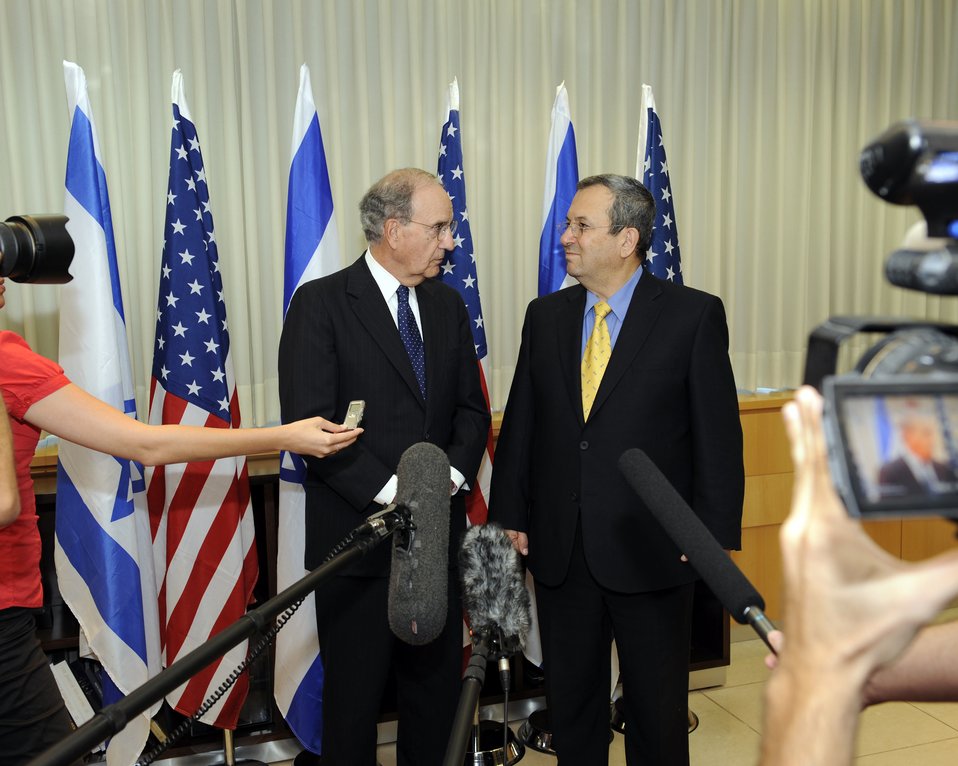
U.S. Special Envoy George Mitchell Meets With Israeli Defense Minister

U.S. Special Envoy George Mitchell with Israeli Minister of Defense Ehud Barak before their meeting in Tel Aviv, Israel July 26, 2009.